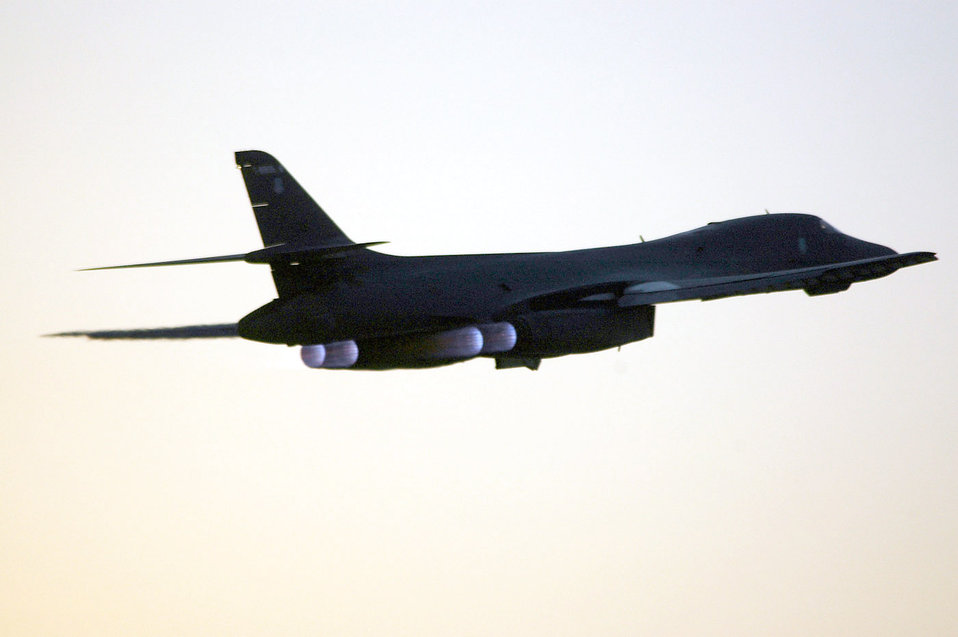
Aug. 10 airpower summary: B-1Bs bomb enemy compound

A B-1B Lancer with the 379th Air Expeditionary Wing takes off from a forward deployed location. Carrying the largest payload of both guided and unguided weapons in the Air Force inventory, the multi-mission B-1 is the backbone of America's long-range bomber force.